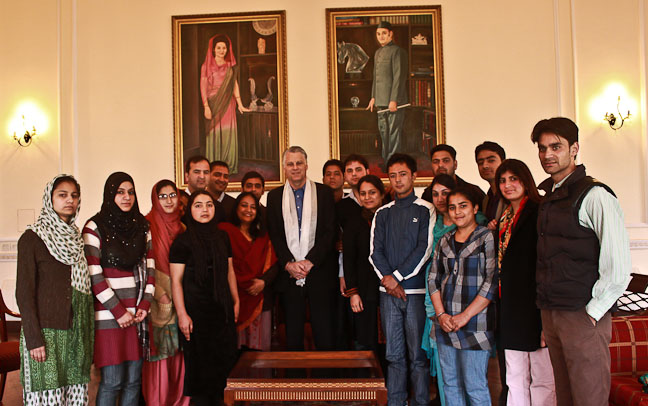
Ambassador Roemer Visits Jammu and Kashmir

U.S. Ambassador to India Timothy J. Roemer visits Jammu and Kashmir, March 17-18, 2011, to engage and listen to the people and connect with the youth of the state.